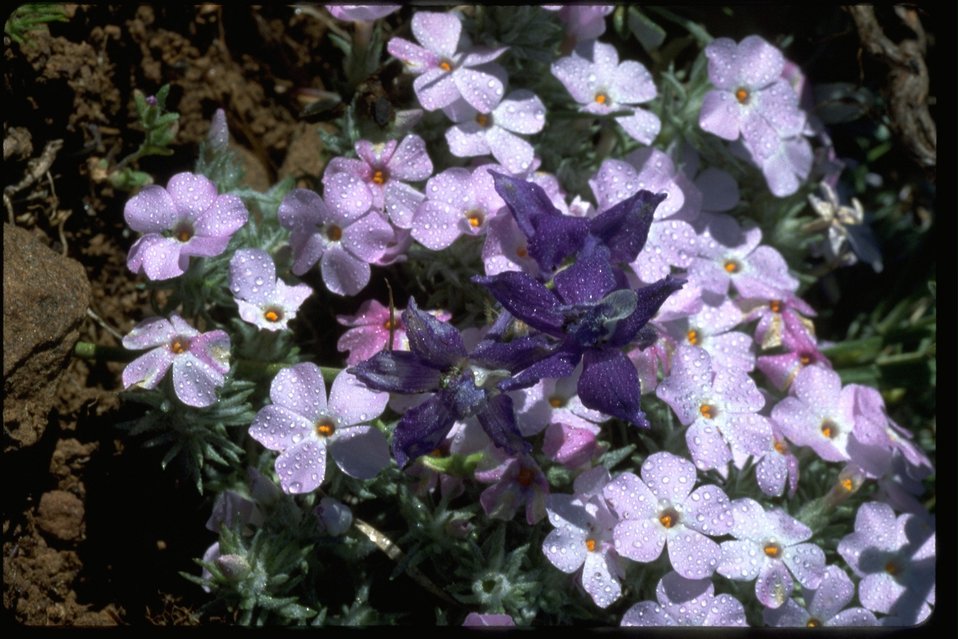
Medium shot of phlox with delphinium/Larkspur wildflowers.